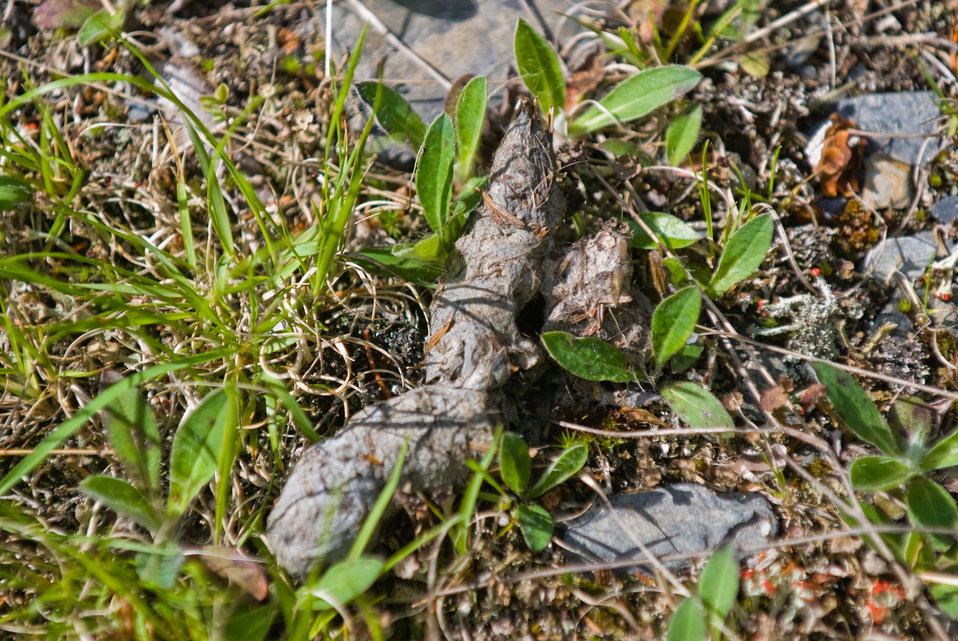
Lynx Scat

Aside from GPS and radio collars, lynx scat can alert biologists to the presence of Canada Lynx in their region of study.